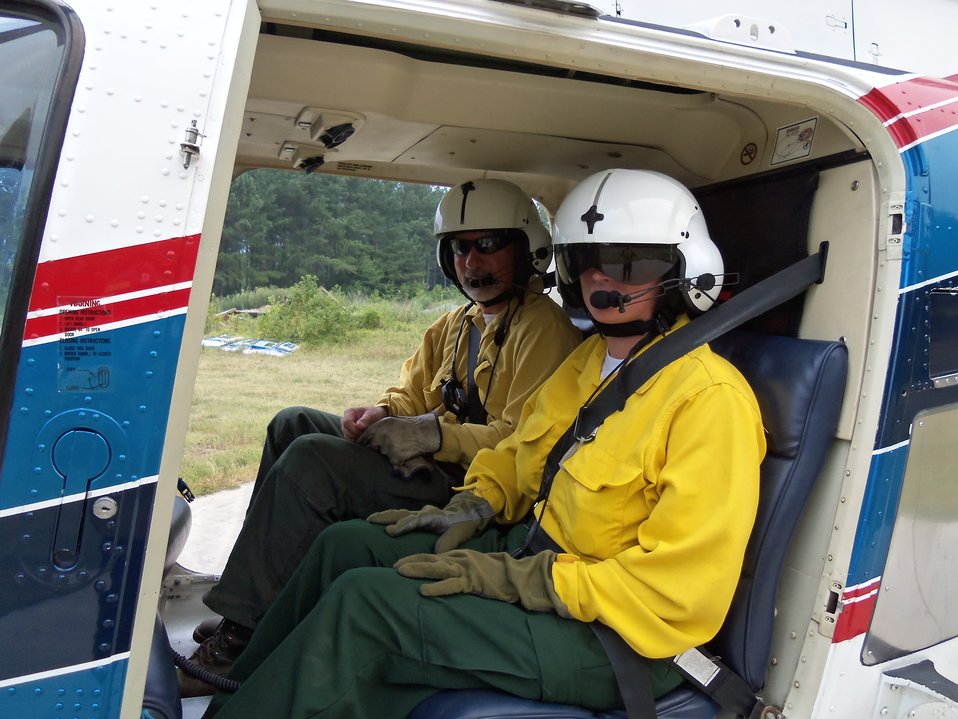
Ready to fly

Suffolk, VA, August 2011:Incident Commander Mike Petruncio from the North Carolina Forest Service and Agency Administrator Joy Greenwood from Great Dismal State Park prepare for a reconnaissance mission at the Lateral West Fire burning on Great Dismal Swamp National Wildlife Rerfuge and Dismal Swamp State Park.